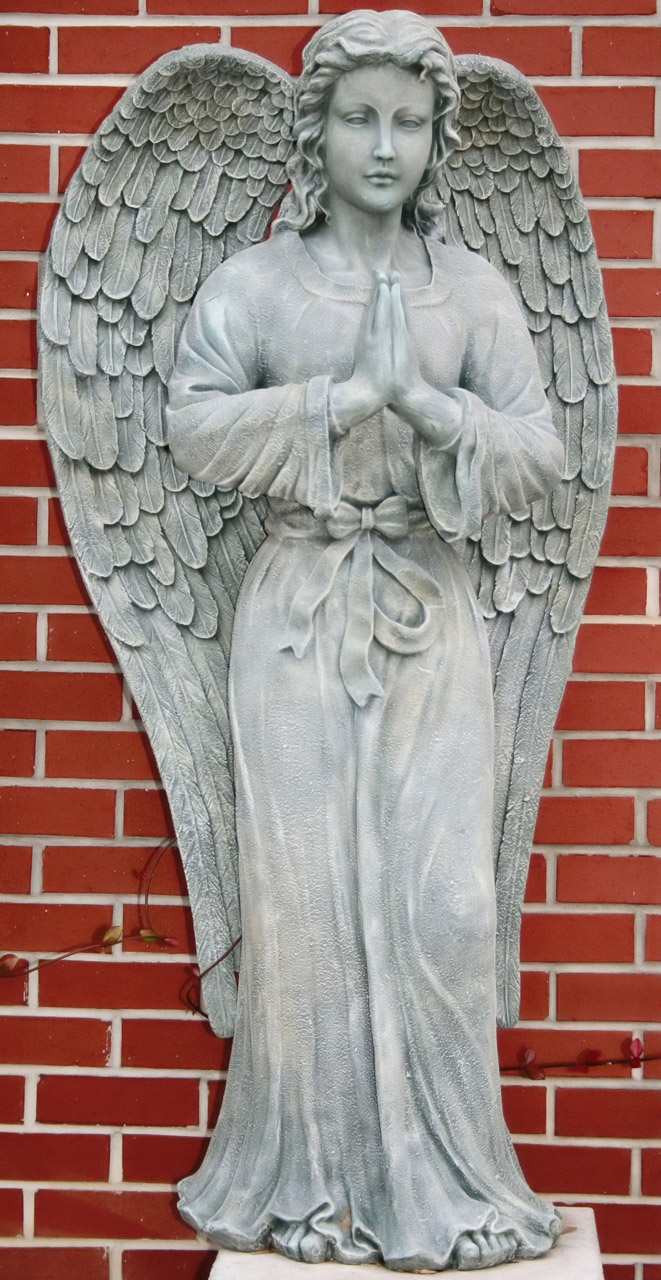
Angel statue 6

A angel statue in a cemetery.